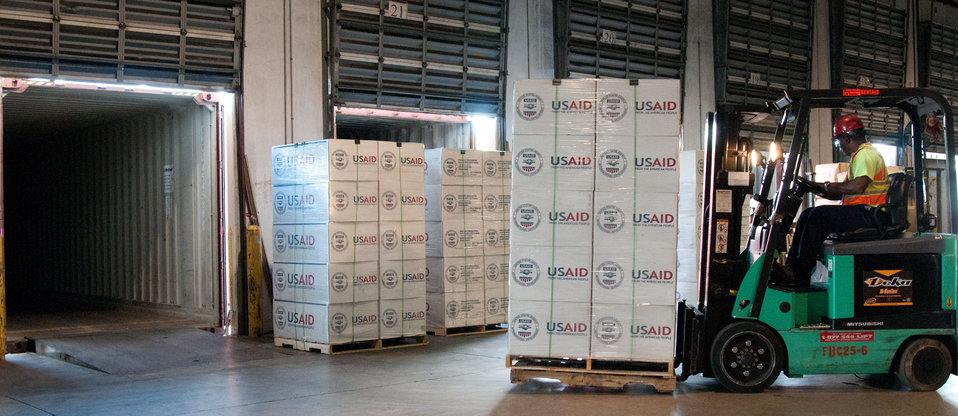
Crowley Logistics in Miami, FL on Friday, August 26, 2011 is one of three U.S. Agency for International Development (USAID) shipping and logistics facilities in the nation. In times of emergency humanitarian relief aid, they can respond with supplies delivered to aircraft at Miami International Airport within two hours. They utilize articulating forklifts, which hinge in the middle to store and retrieve pallets of supplies through narrow aisle ways. This allows for a higher density of stored supplies in the warehouse. Pallets of supplies are stacked three levels high. USAID provides humanitarian assistance through the Office of U.S. Foreign Disaster Assistance (OFDA). OFDA is the lead U.S. Government (USG) office charged with providing and coordinating USG humanitarian assistance in response to international emergencies and disasters. To achieve this, USAID works in cooperation with other USG offices such as the U.S. Department of Agriculture (USDA), and international humanitarian experts. The USDA provides food assistance to support emergency feeding programs in countries experiencing food shortages due to drought and civil conflict.